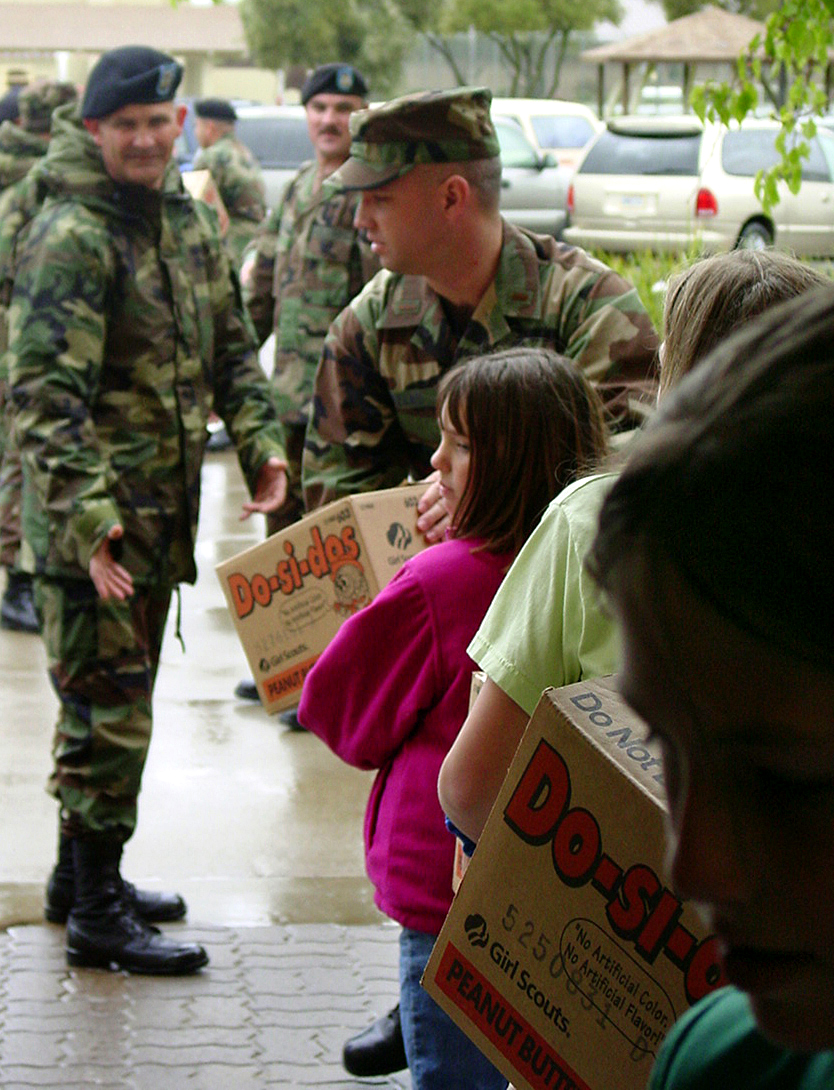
Cookies for the troops

BEALE AIR FORCE BASE, Calif. -- 2nd Lt. Jeff Beard, 9th Maintenance Group executive officer, passes a case of Do-si-dos down the assembly line en route to a waiting California Air National Guard truck. The Girl Scout cookie drive netted 22,000 boxes of cookies for deployed U.S. troops overseas